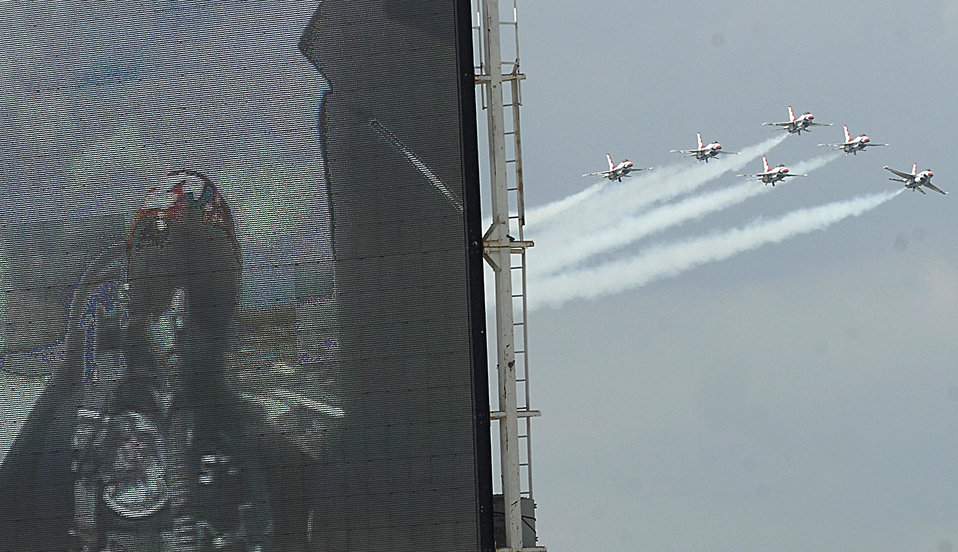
Away we go!

The Thunderbirds fly by as the Jumbotron shows the lead pilot during the Joint Service Open House May 16 on Andrews Air Force Base, Md.